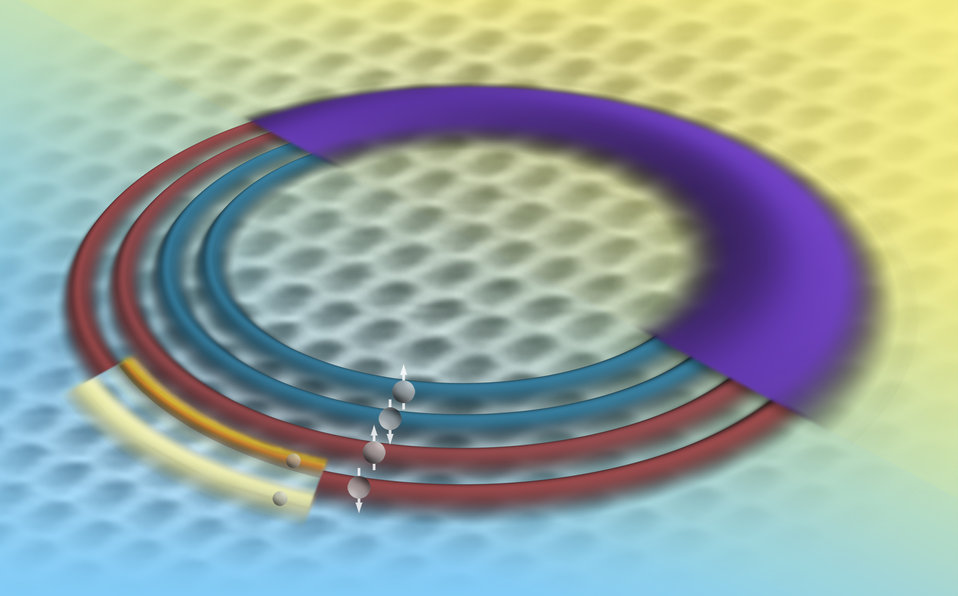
NIST Researchers Hear Puzzling New Physics from Graphene Quartet's Quantum Harmonies

This artist's rendition illustrates the electron energy levels in graphene as revealed by a unique NIST instrument. Because of graphene's properties, an electron in any given energy level (the wide, purple band) comprises four quantum states (the four rings), called a 'quartet.' This quartet of levels split into different energies when immersed in a magnetic field. The two smaller bands on the outermost ring represent the further splitting of a graphene electronic state.